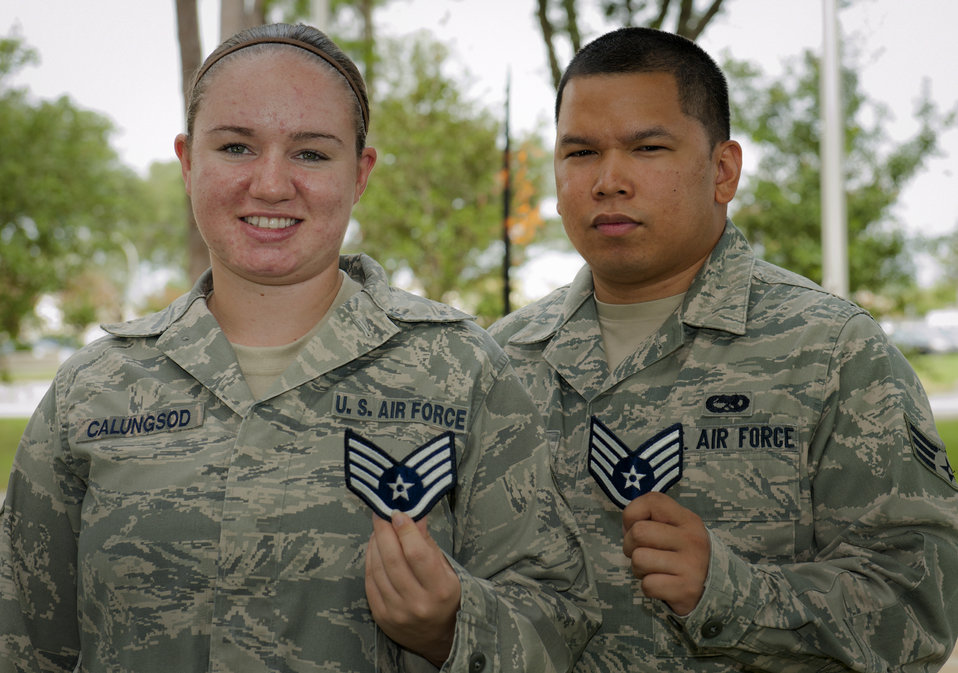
Ranking up together

Senior Airmen Joseph and Nicole Calungsod, a married couple in the 33rd Fighter Wing, were both selected for promotion to staff sergeant on their first try. The couple is in the same career field and work in the same unit, the 33rd Maintenance Squadron. They will sew on the new non-commissioned officer stripe just after they have their first child.